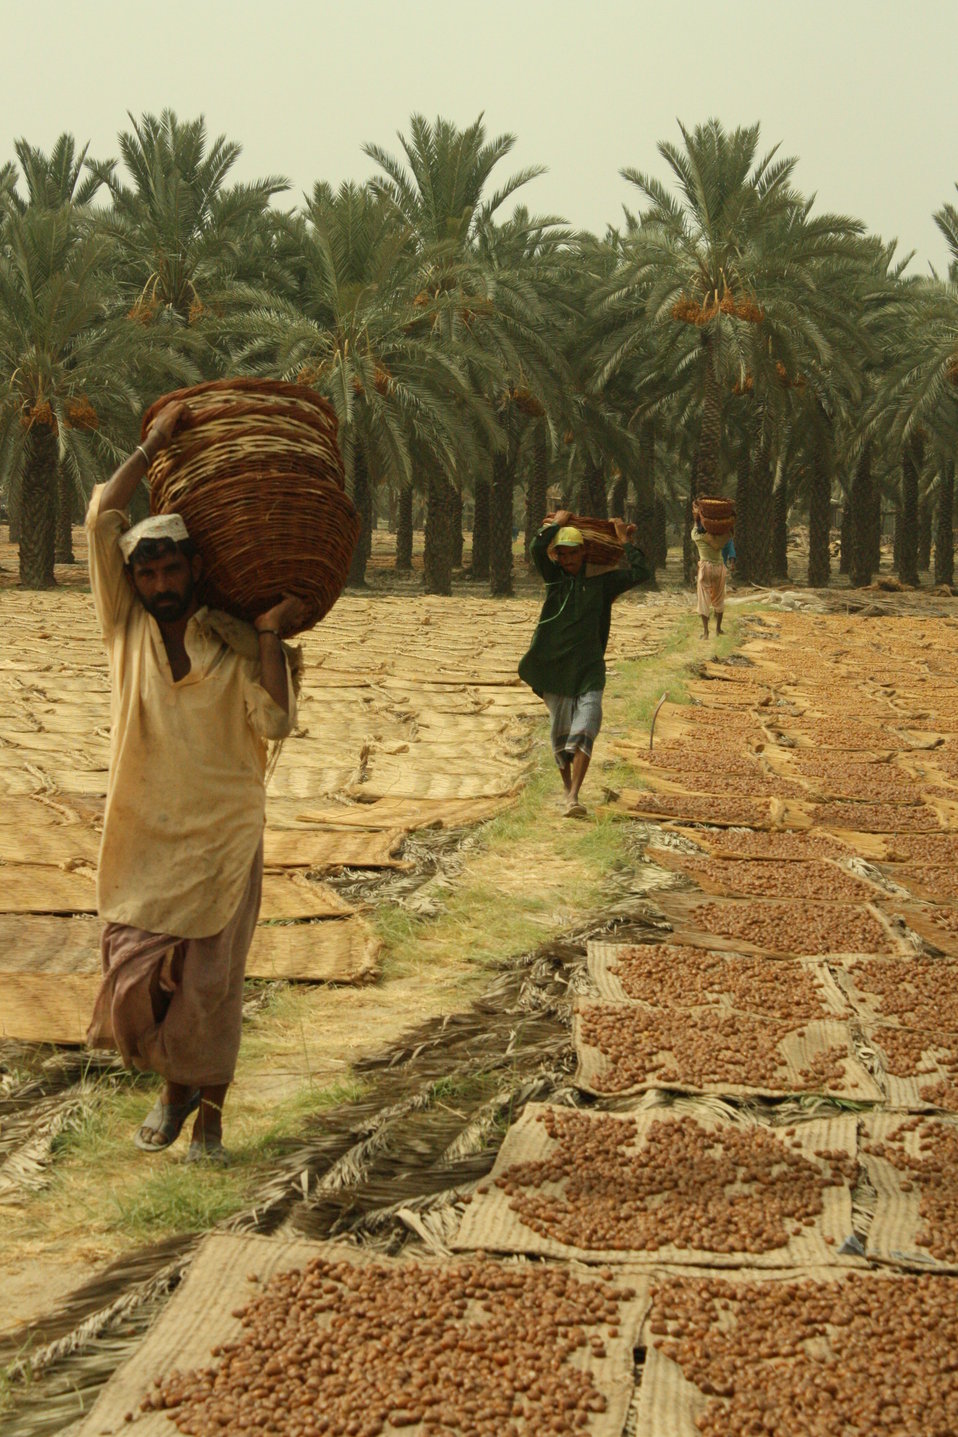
Dates are the third largest horticulture crop grown in Pakistan with an annual production of 550,000 to 650,000 metric tons (MT).